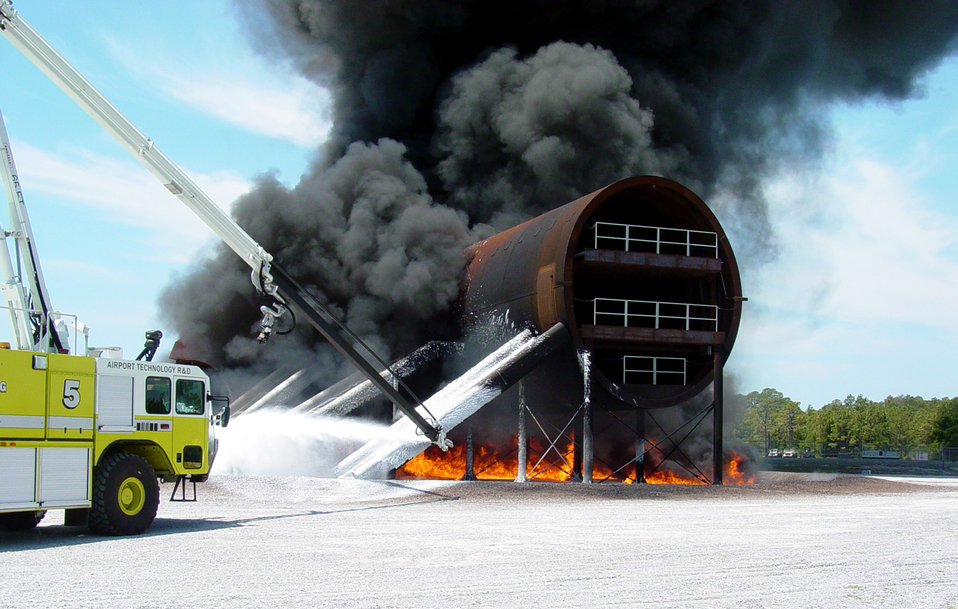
Double deck aircraft mockup aids firefighting research

Engineers conduct a JP-8 pool fire using 250 gallons of fuel to test temperature sensors on the new large aircraft mockup Sept. 25 at Tyndall Air Force Base, Fla. Air Force Research Laboratory officials, working with the Federal Aviation Administration, developed the mockup to research firefighting and rescue techniques in today's larger, multi-deck aircraft.